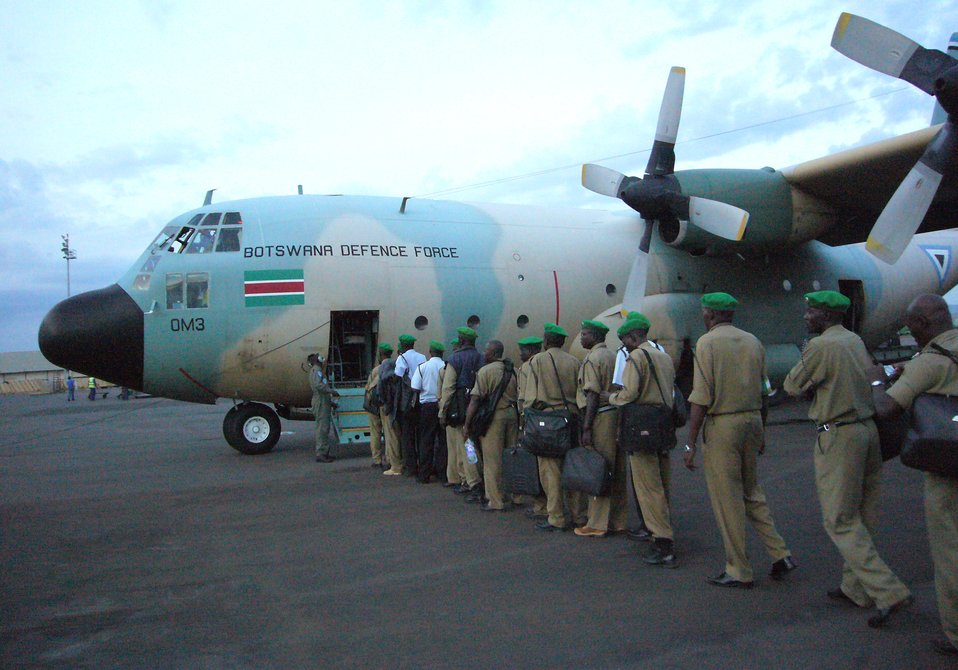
Ramstein team flies into Darfur with Botswana aircrew

Ugandan civil police prepare to board a Botswana C-130 at the airport in Kigali, Rwanda. They were returning home after a one-year deployment to the Darfur region where they were part of the African Union peacekeeping mission.